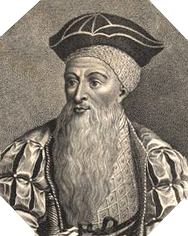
Afonso de Albuquerque (1462-1515), Portuguese soldier and politician. Português: Afonso de Albuquerque (1462-1515), militar e político português.